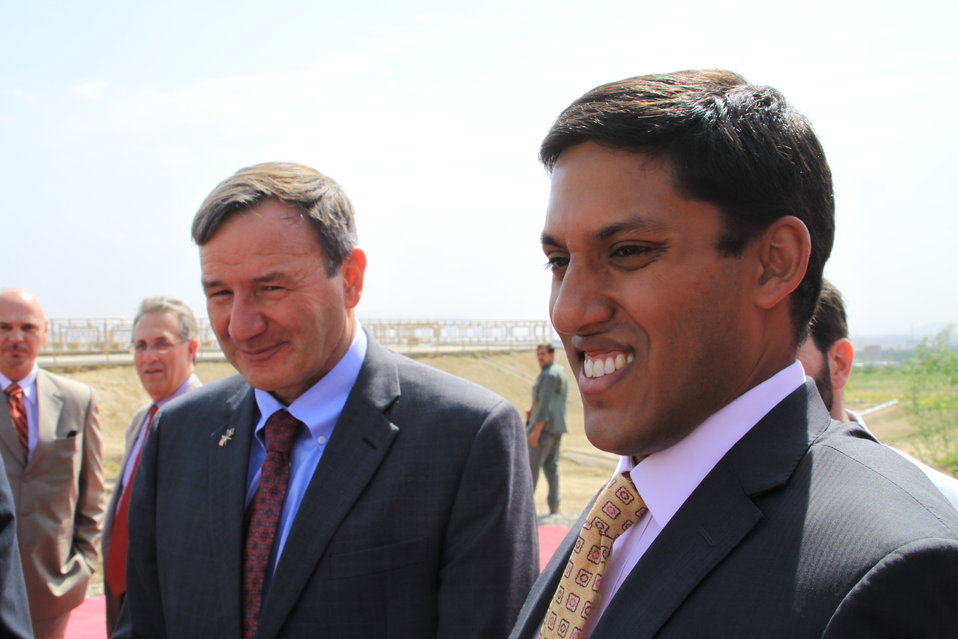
Badam Bagh Farm